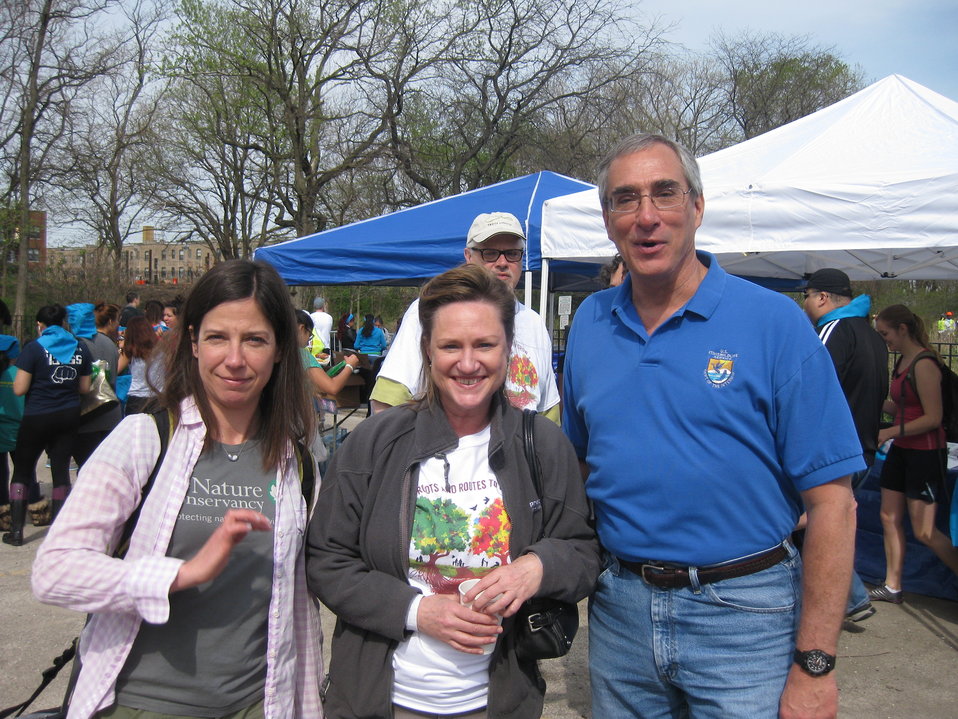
Tom Melius meets TNC IL Director Michelle Carr and Susan Donovan

R3 RD Tom Melius meets TNC Illinois Director Michelle Carr and Susan Donovan
Chicago Park District Burnham Corridor Community Planting Day
May 10, 2014
Photo by USFWS; Louise Clemency